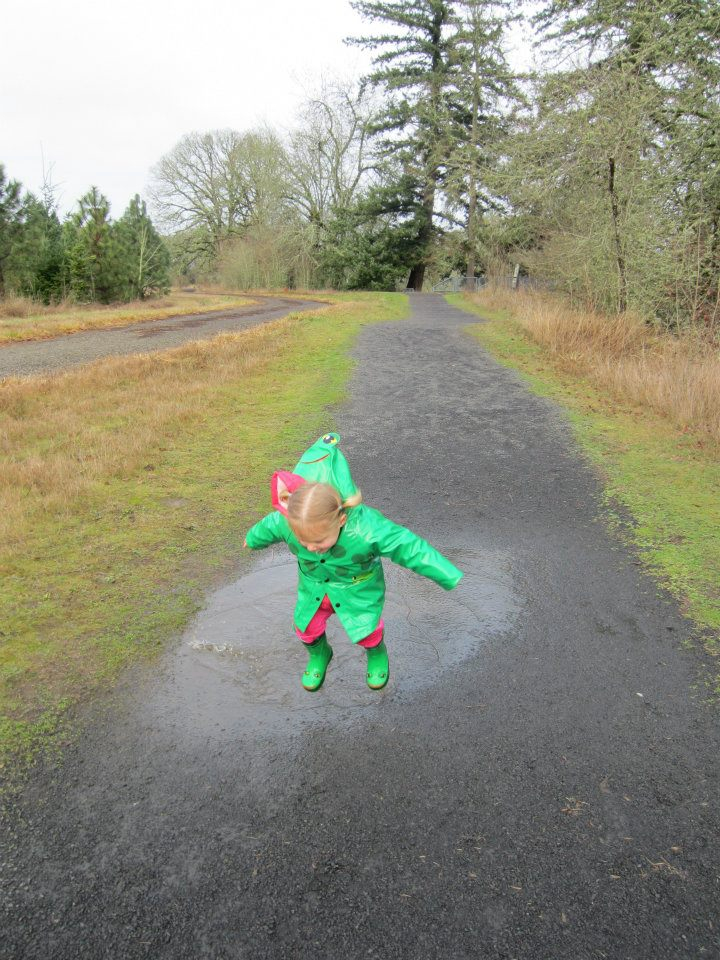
young puddle stomper

There was plenty of rain in early January for the first session of the popular Puddle Stompers outdoor learning event at Tualatin National Wildlife Refuge.